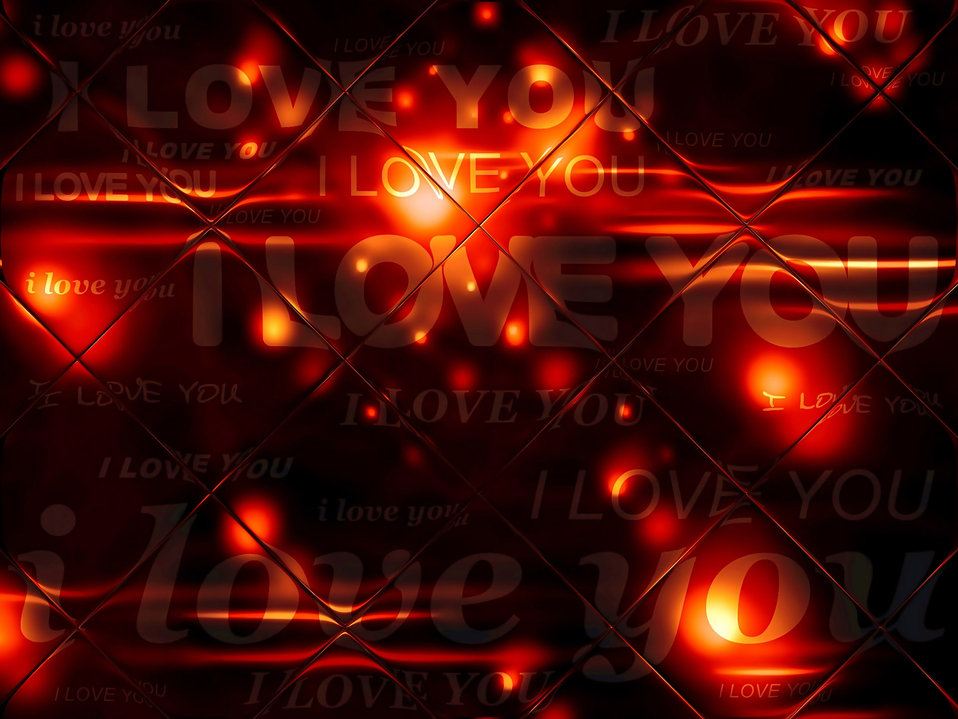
Background 326

Background.